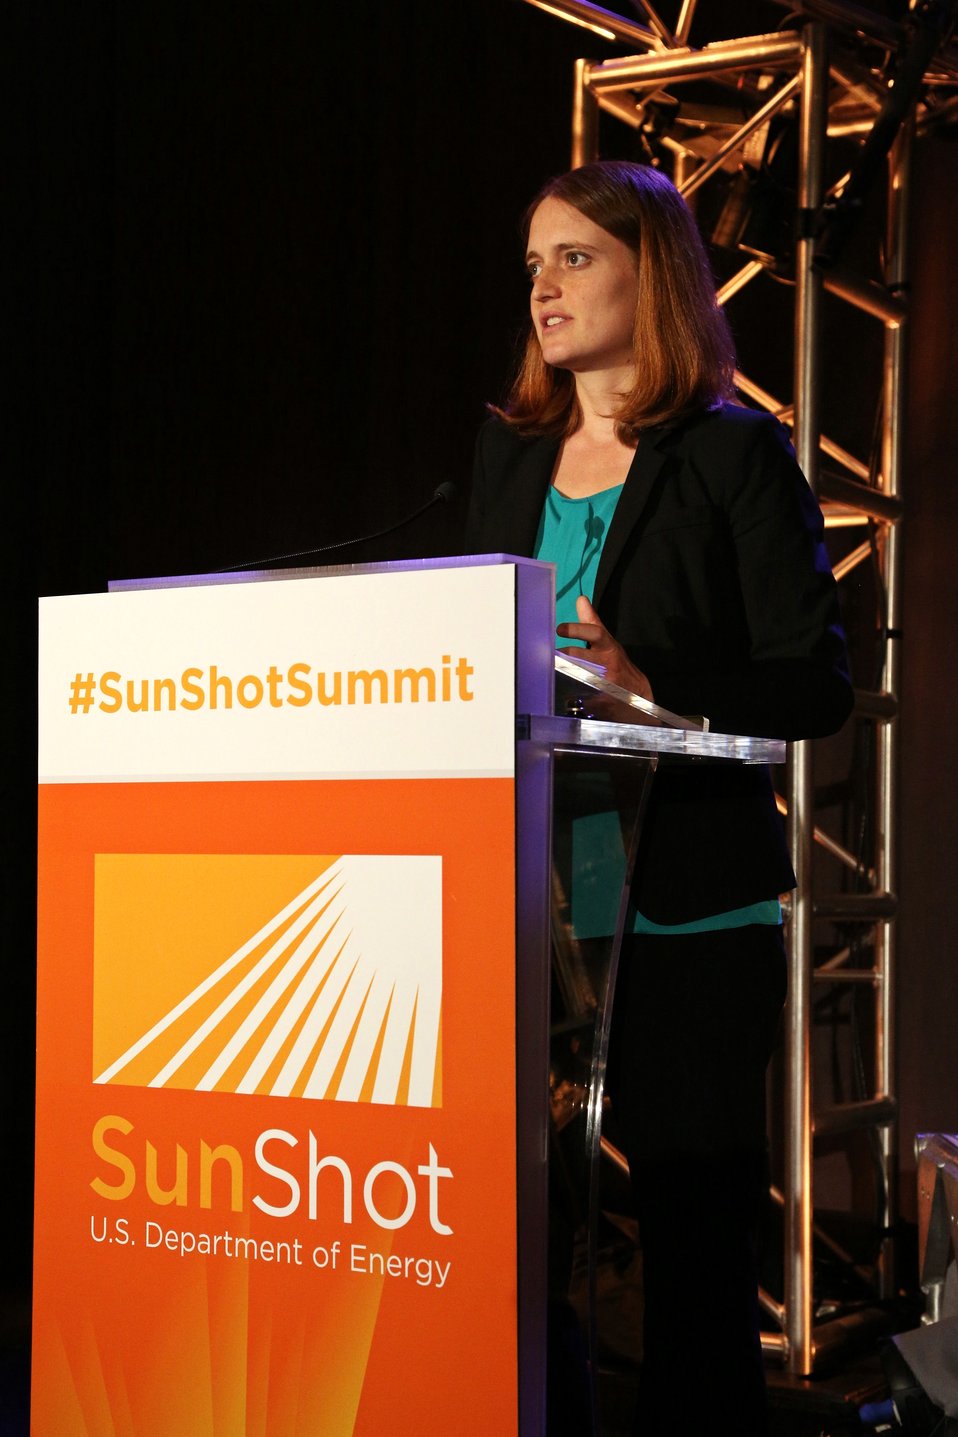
Day 2 Keynote Session 24

Dr. Becca Jones-Albertus, Photovoltaics Program Manager providing a SunShot Portfolio Overview.